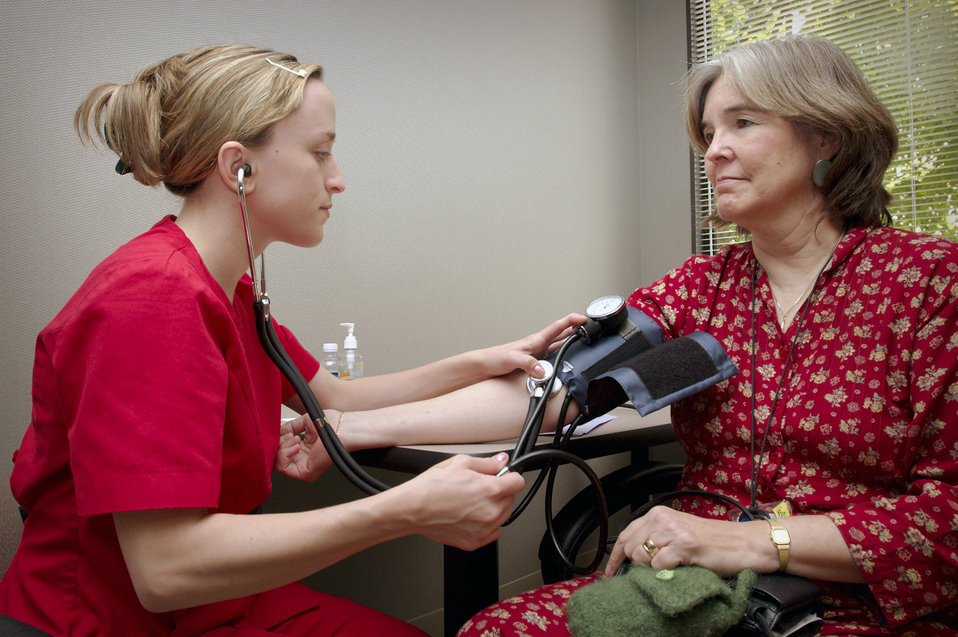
Taking blood pressure

Ava Navin (right), of the National Center for Infectious Diseases (NCID), was shown having her blood pressure taken by Regan Hall, of the National Center for Chronic Disease Prevention and Health Promotion (NCCDPHP), during a 2005 CDC blood pressure screening event. Campuses included were Century Center, Chamblee, Corporate Square, Executive Park, Koger, and Roybal, and was provided by the Office of Women's Health (OWH), Office of Health and Safety (OHS), NCCDPHP's Cardiovascular Health Branch (CVH), as well as volunteers from various other centers, institutes, and offices (CIOs). This annual event was held in observance of National High Blood Pressure Education Month, National Nurses Week, and National Women's Health Week.High blood pressure (HBP), or hypertension, is known as a 'silent killer' for people who have HBP often do not experience symptoms, but are at greater risk for heart disease and stroke, which are leading causes of death in both women and men.